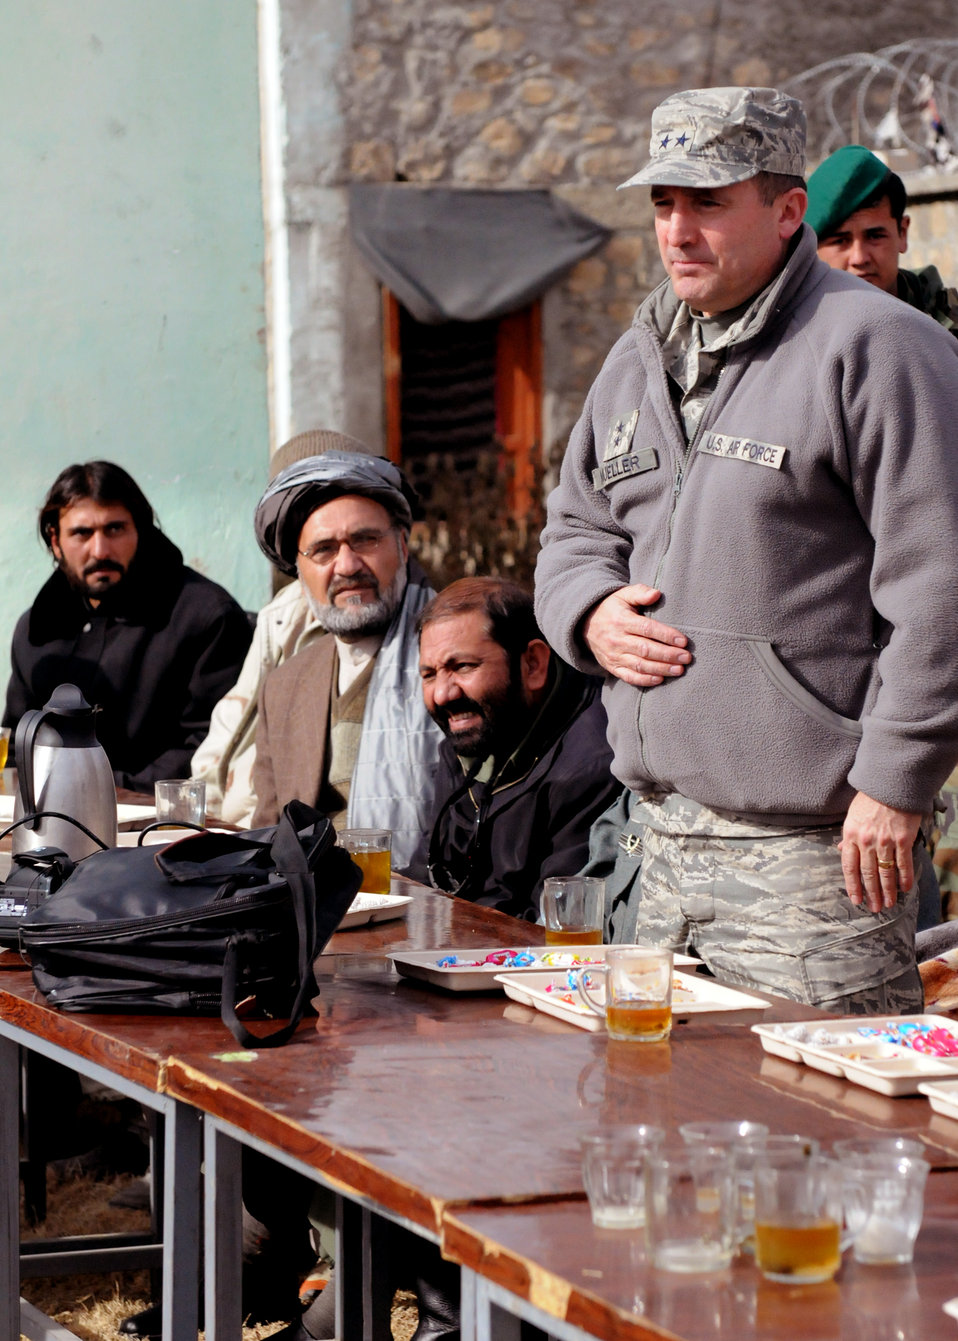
American servicemembers bridge gap between Afghan provinces, relationships

Maj. Gen. Stephen P. Mueller speaks to Afghan village elders prior to the opening ceremony of the Arghandab Bridge Dec. 26, 2009 at Zabul Province, Afghanistan. General Mueller is the U.S. Air Forces Central Air Component Coordination Element director.